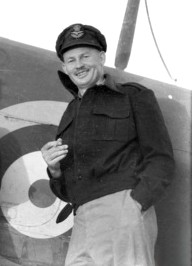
Western Desert. Cropped image of Flight Lieutenant John Jackson.